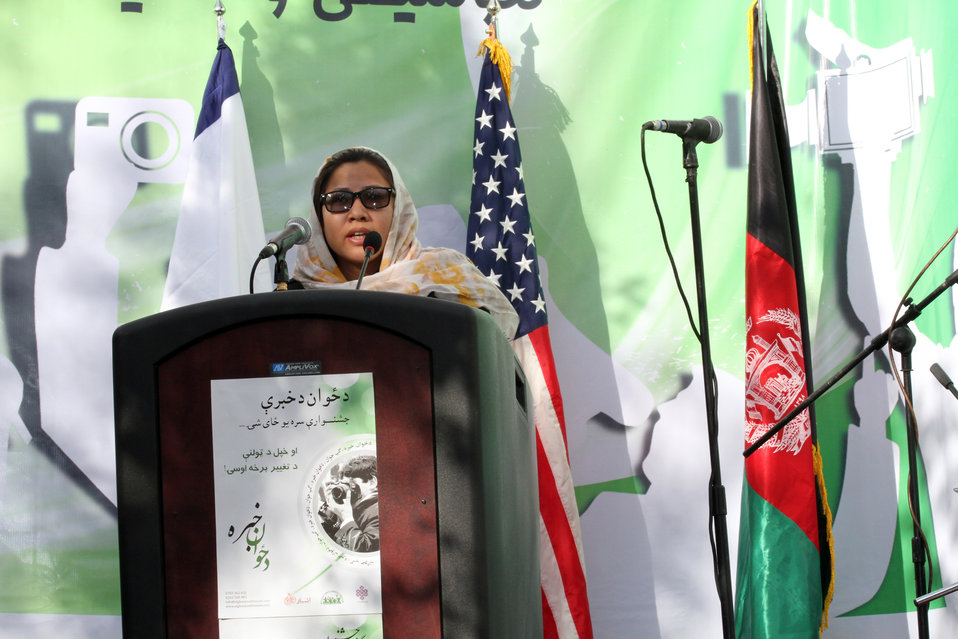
Afghan Youth Festival

Internews - USAID